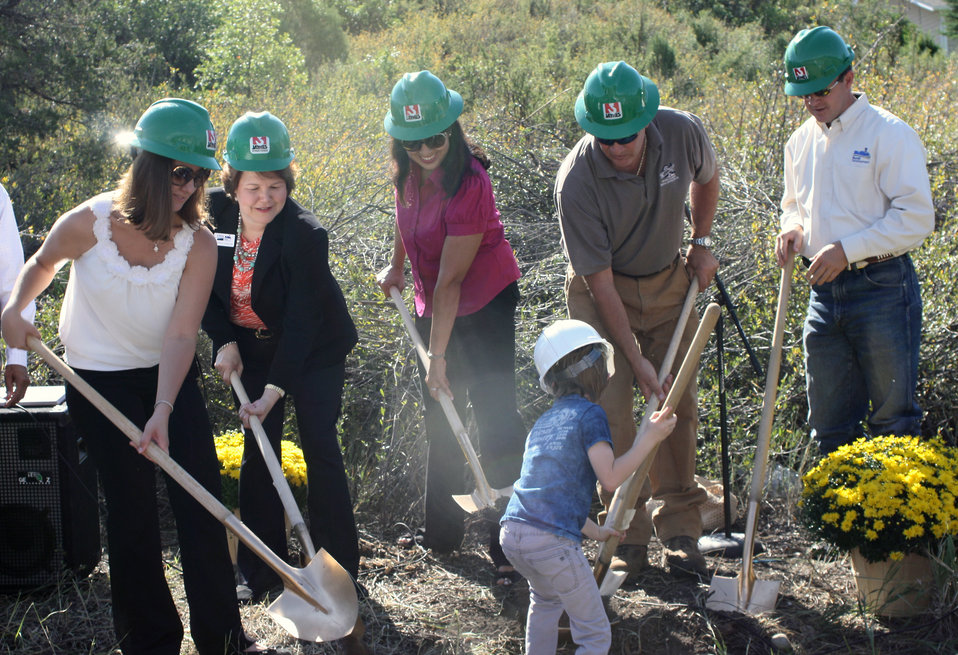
U.S. Department of Agriculture’s (USDA) Rural Development (RD) Business and Cooperative Programs Administrator Judith Canales (black suit) assists at the groundbreaking of the Riverhouse Children’s Center in Durango, CO on Thursday, Aug. 30, 2012. USDA RD provided $1.6 million in Community Facility loan funding for the project.